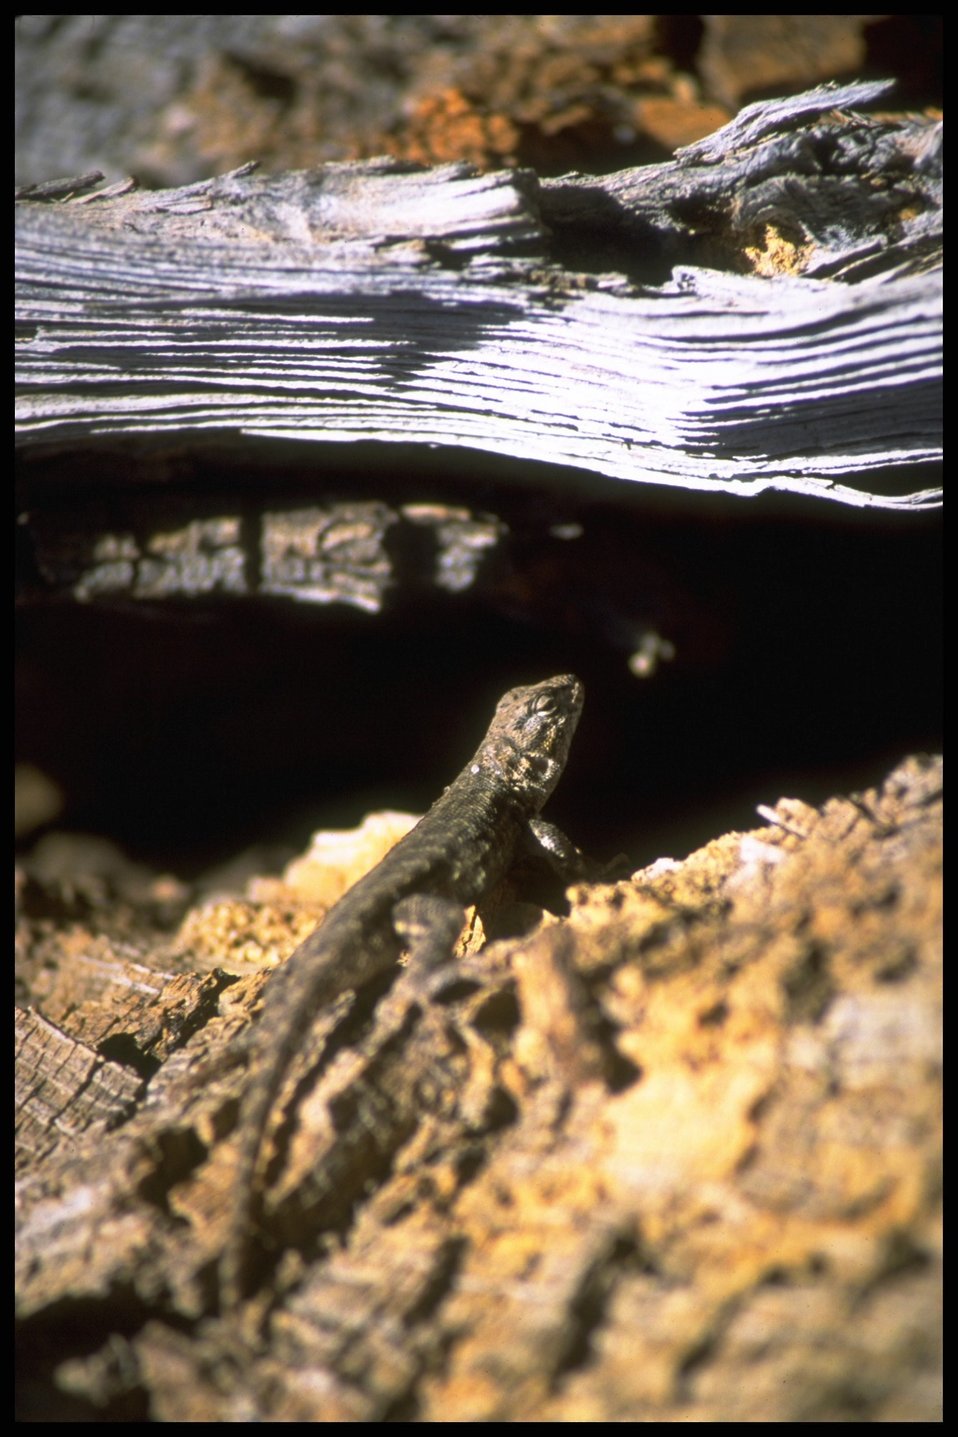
Close shot of Lizard. Lakeview District.